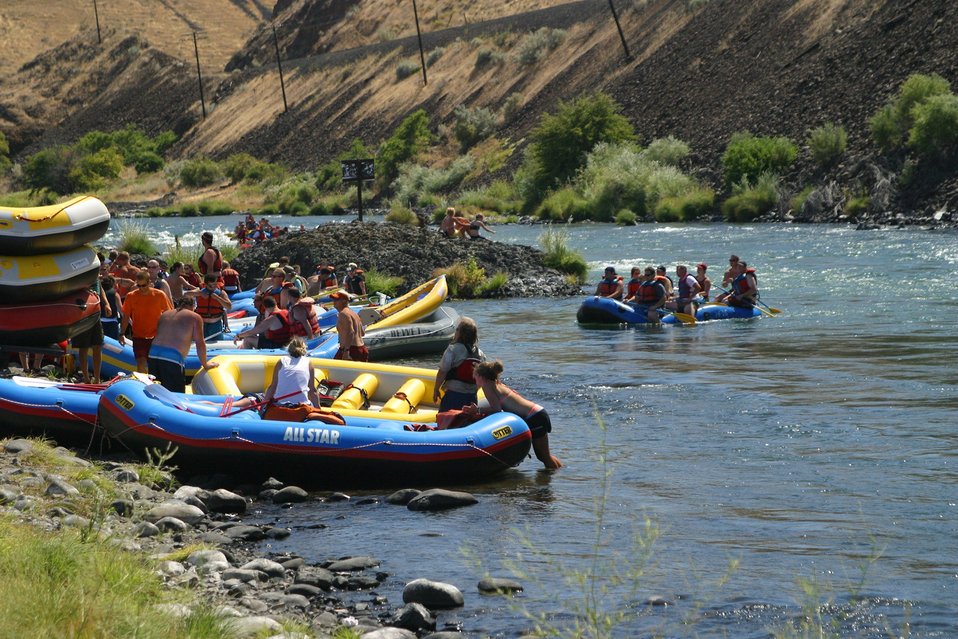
Sandy Beach is the last take out before Sherars Falls. All watercraft must exit the river!